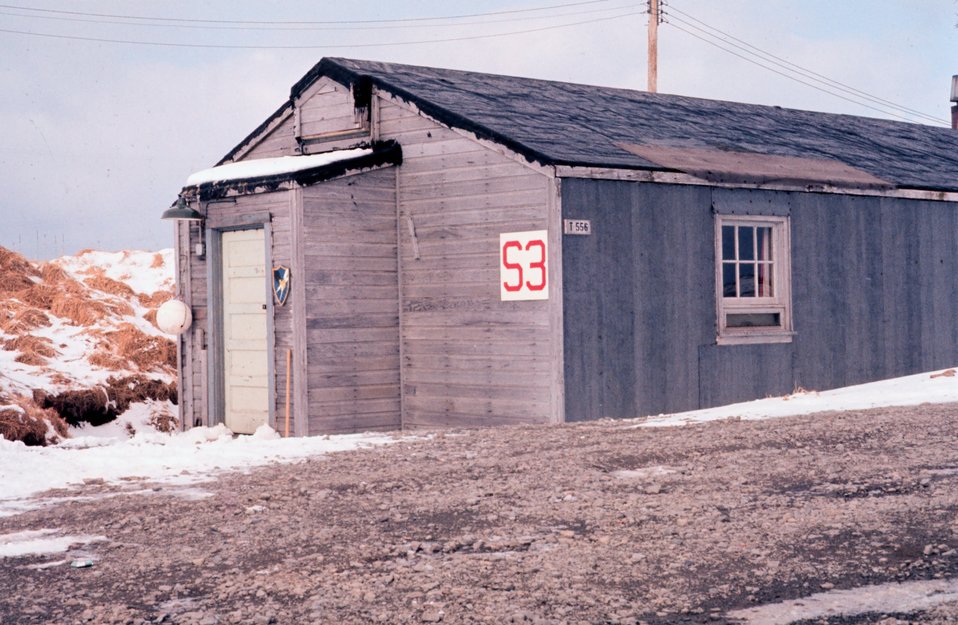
Station Number 004. 52 42 49 North Latitude. 174 07 26 East Longitude.